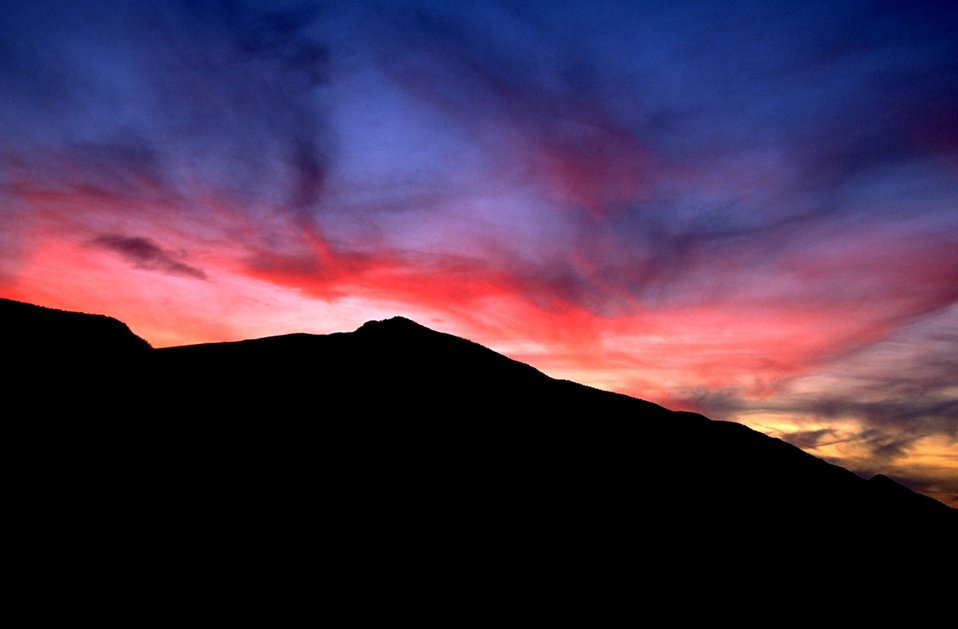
Beautiful contrast of reds and blues in a sunset over mountains